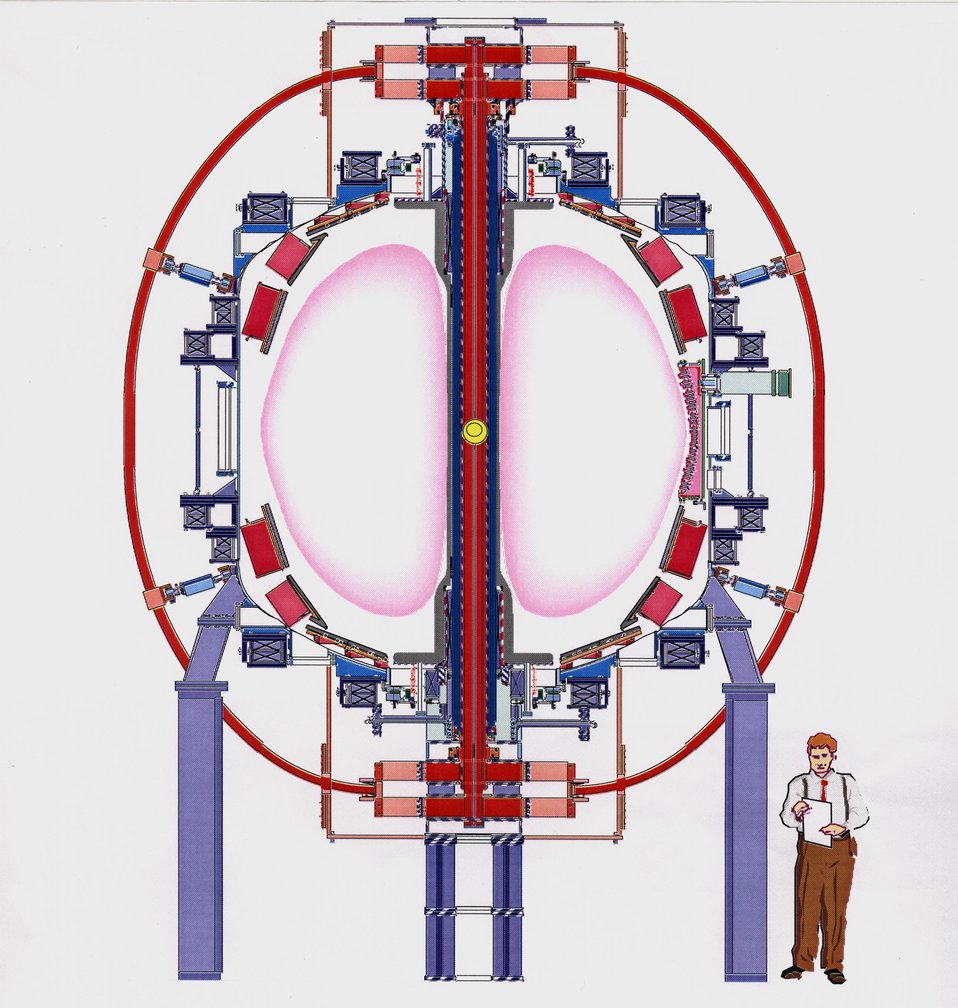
ARTISTS CONCEPT OF THE NATIONAL SPHERICAL TORUS EXPERIMENT (NSTX) AT PPPL.
THE NSTX, JOINT PROJECT BY PPPL, ORNL, COLUMBIA UNIVERSITY AND UNIVERSITY OF WASHINGTON, IS DESIGNED TO TEST THE PHYSICS PRINCIPLES OF SPHERICAL TORUS PLASMAS. NSTX WILL PRODUCE A PLASMA, SHAPED LIKE A SPHERE WITH A HOLE THROUGH ITS CENTER, DIFFERENT FROM THE DONUT SHAPE OF THE TOKAMAK. THIS STUDY MAY LEAD TO DEVELOPMENT OF SMALLER, MORE ECONOMIC FUSION REACTORS.